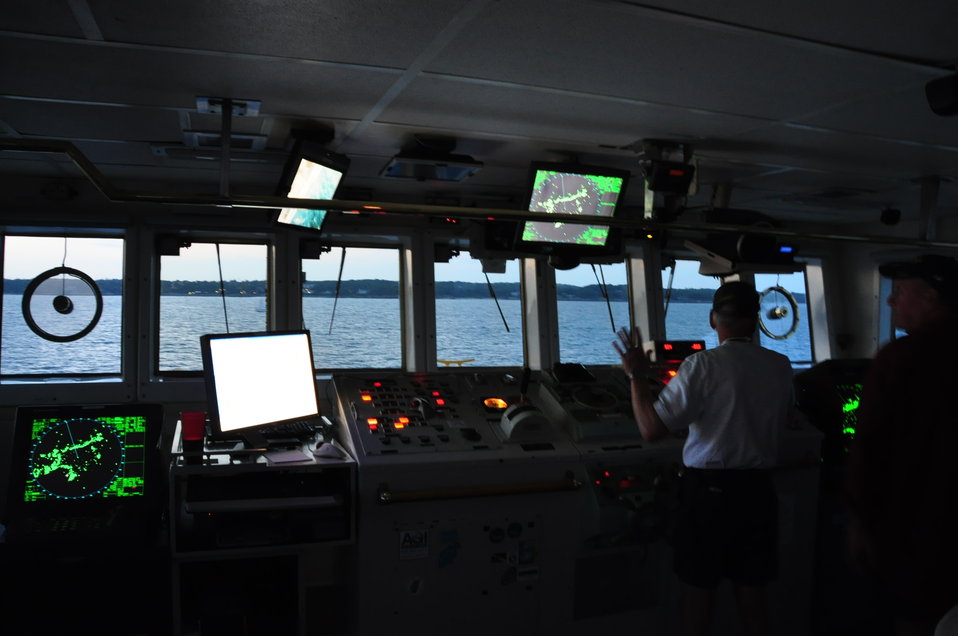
August 5, 2011 Setting up for evening sampling round